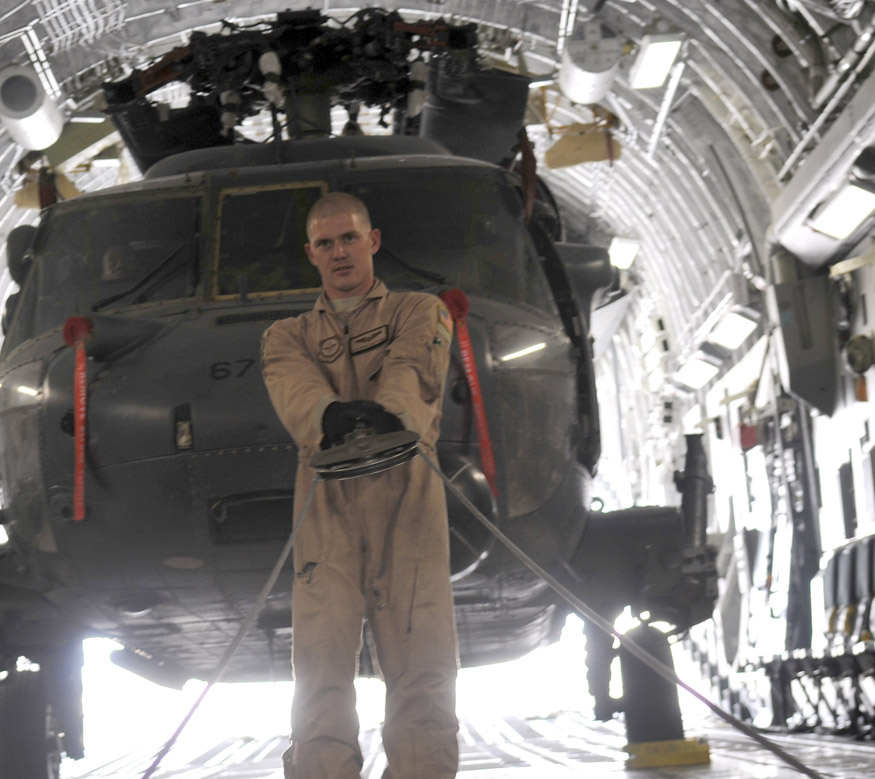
Understanding life as a loadmaster

Airman 1st Class Brain Whitcomb pulls cable from a C-17 Globemaster III's deck pulley system to attach to an HH-60 Pave Hawk Aug. 12, 2010, at Joint Base Balad, Iraq. The C-17 can change its cargo bay to accommodate almost any load. Airman Whitcomb is a loadmaster assigned to the 10th Airlift Squadron.